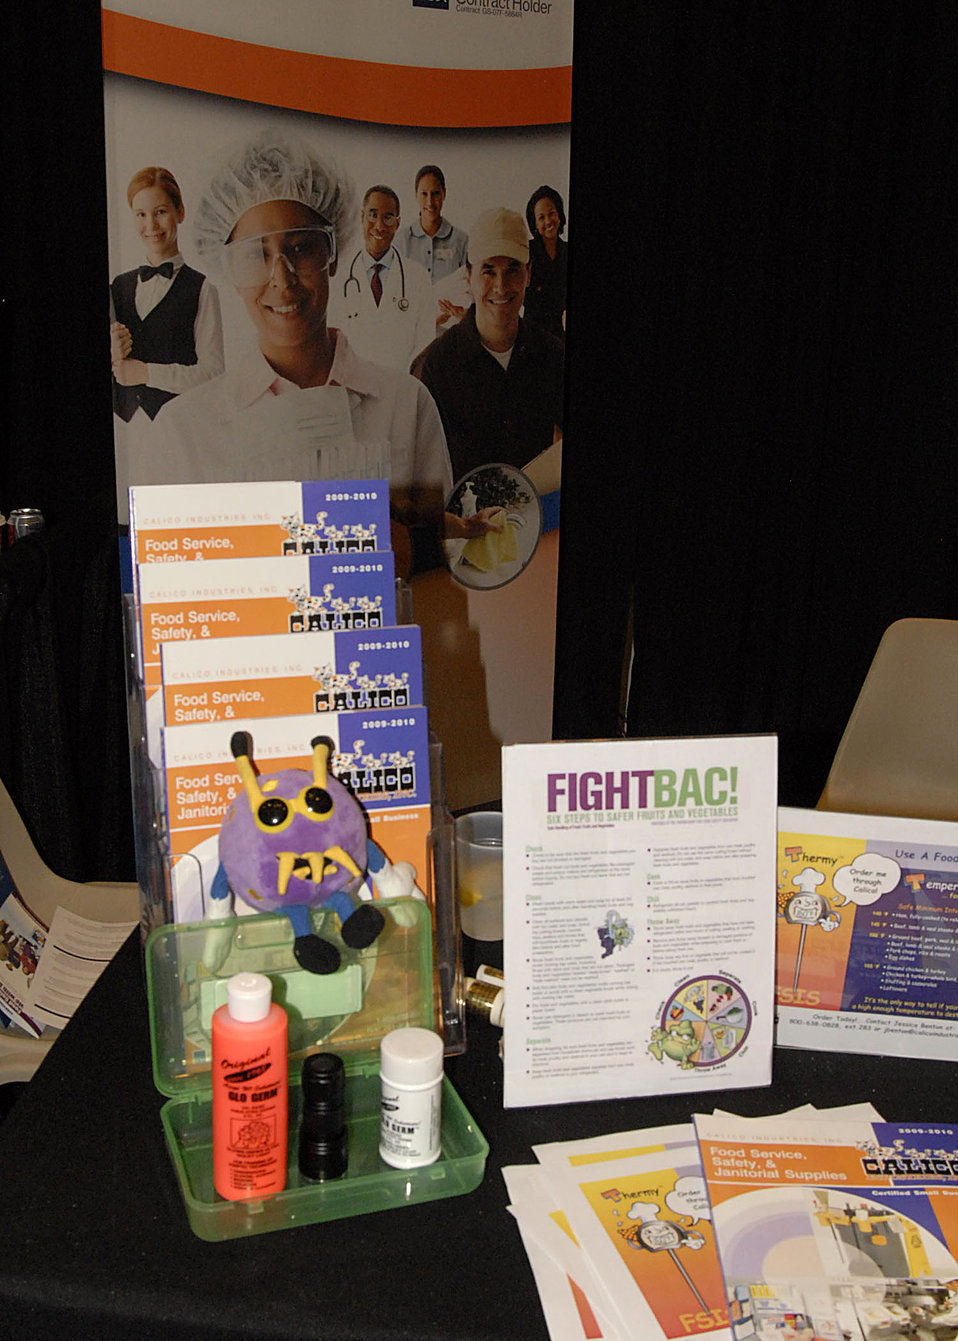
U. S. Department of Agriculture exhibits at the Food Safety Education Conference held in Atlanta, GA., on Mar. 24, 2010. Food borne illness is a preventable and underreported disease that presents a major challenge to both the general and at-risk populations. The education of consumers worldwide with knowledge and better safe food handling behaviors is the best line of defense against pathogens causing these illnesses. USDA photo 10di1284-04